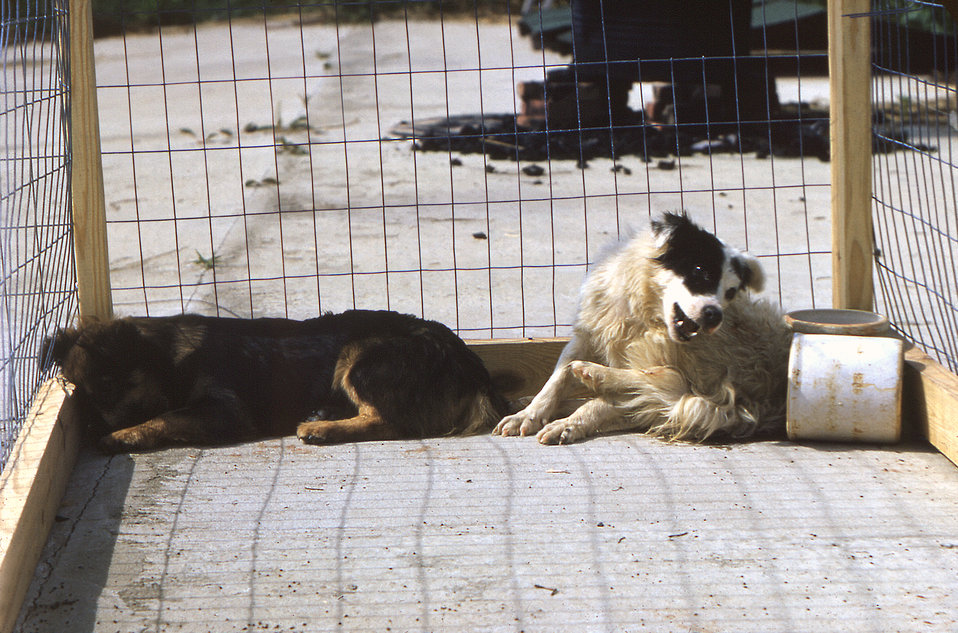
Two dogs infected with rabies

Here are two dogs afflicted with dumb rabies, manifested as depression, and an attempt at self-imposed isolation.